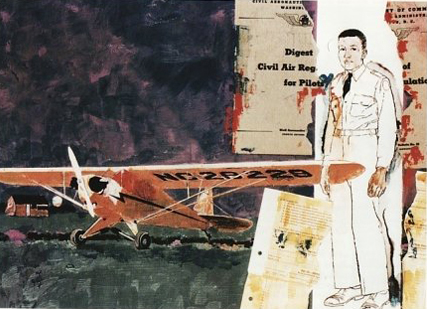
Roy LaGrone artwork on display depicts efforts of Tuskegee Airmen